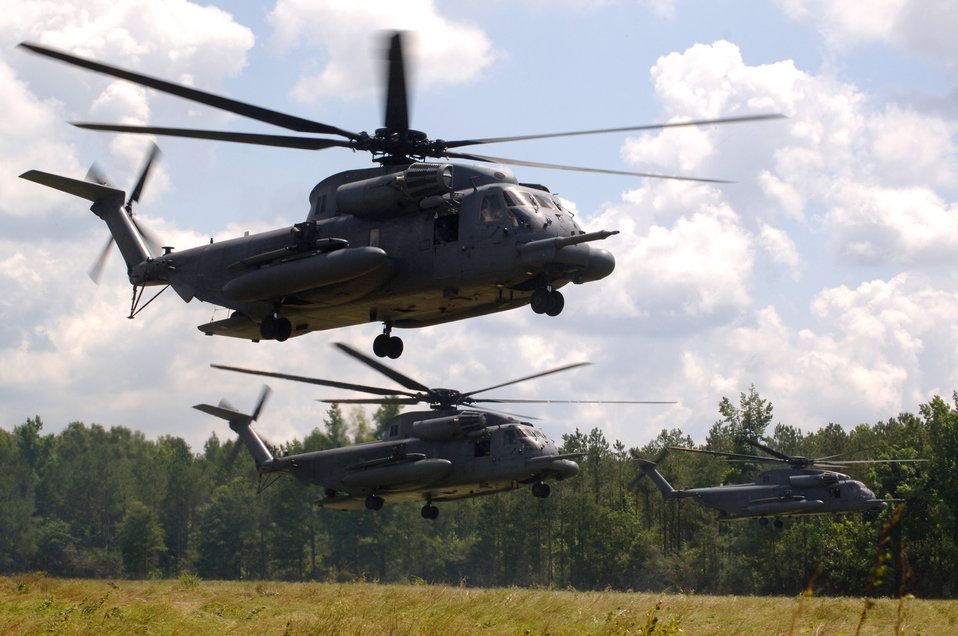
Fly high, pave low

MH-53 Pave Low helicopters from the 20th Special Operations Squadron at Hurlburt Field, Fla., fly over a live-fire range June 12 at Eglin Air Force Base, Fla. The helicopter's terrain-following and terrain-avoidance radar, forward-looking infrared sensor, inertial navigation system with global positioning system enable the crew to follow terrain contours. This helps the crew to avoid obstacles in adverse weather, making low-level tactical penetration possible.